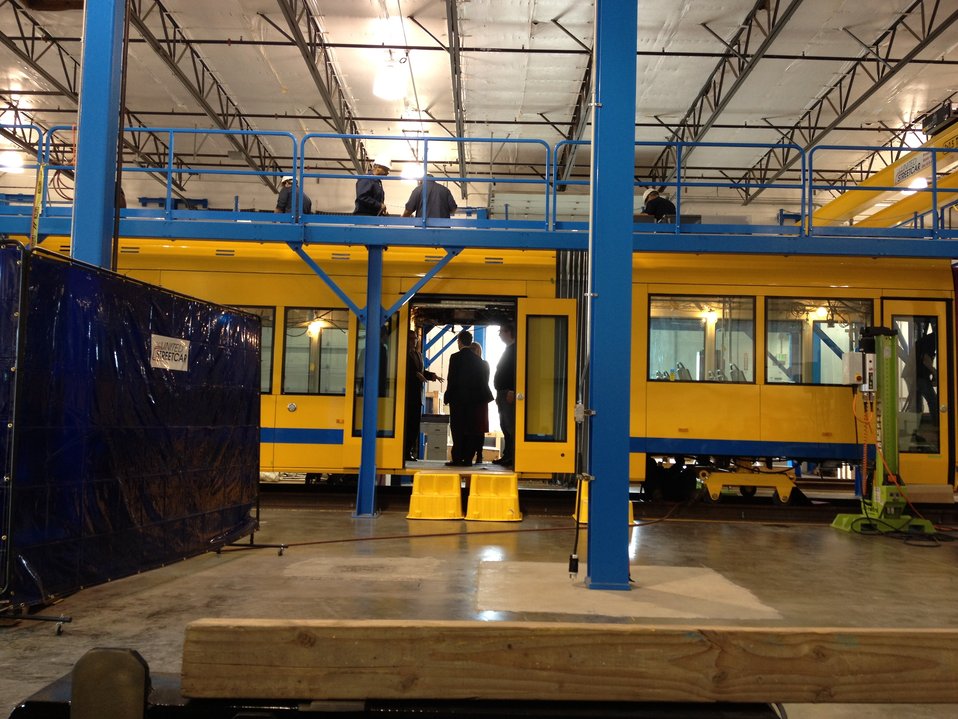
Treasury Secretary Geithner Visits Oregon Iron Works

Treasury Secretary Tim Geithner toured the facility and was able to step into a streetcar nearing completion at United Iron Works. Through its United Streetcar division, Oregon Iron Works brought the manufacturing of streetcars back to the United States for the first time in 60 years and is producing streetcars for Portland and Tucson, Arizona, and just won a bid to produce streetcars for Washington, DC.